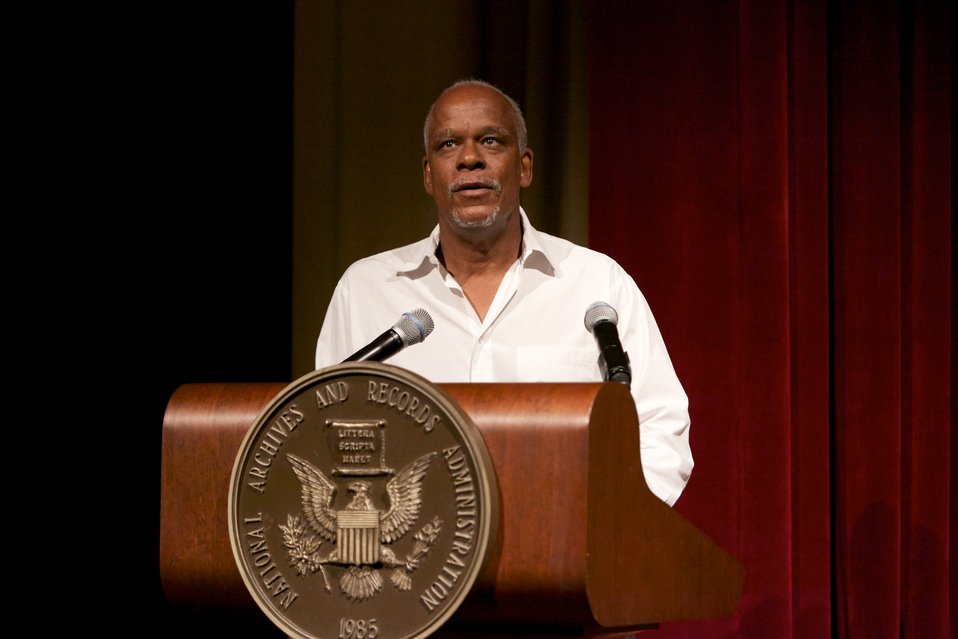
Freedom Summer